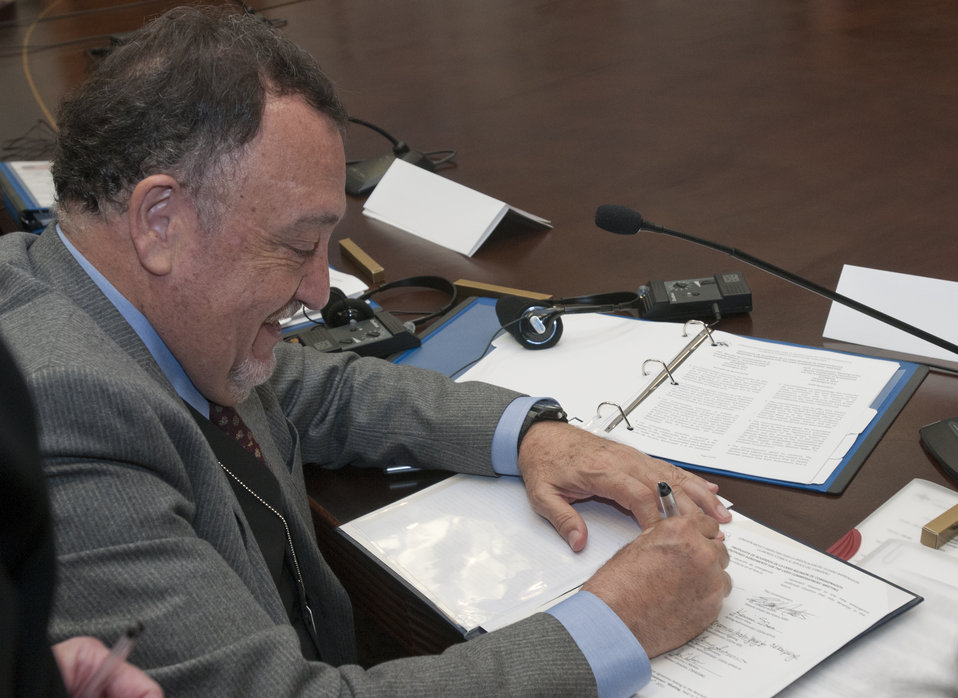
Mexican Agriculture and Food Safety Chief Dr. Enrique Sanchez Cruz signs a Memorandum of Understanding (MOU) at the U.S. Department of Agriculture’s (USDA) 73rd and Final Commissioners Meeting of the U.S. – Mexico Cooperative Screwworm Program in the Williamsburg room at USDA in Washington, D.C. on Oct. 5, 2012.